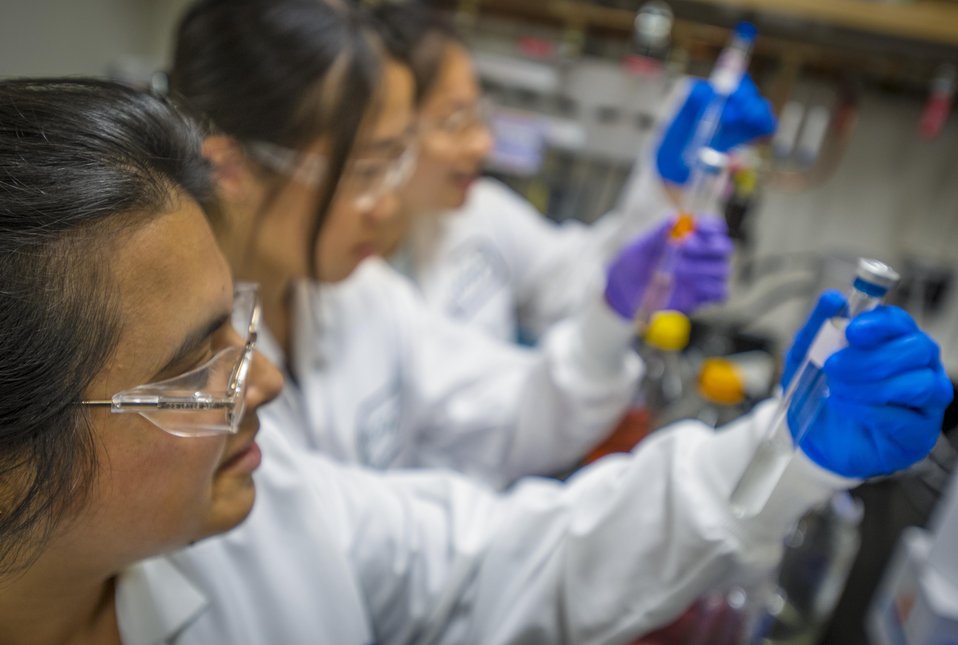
Shown are glass bioreactors and anaerobic chamber- research for enigma (ecosystems and networks integrated with genes and assemblies) at Lawrence Berkeley National Laboratory.